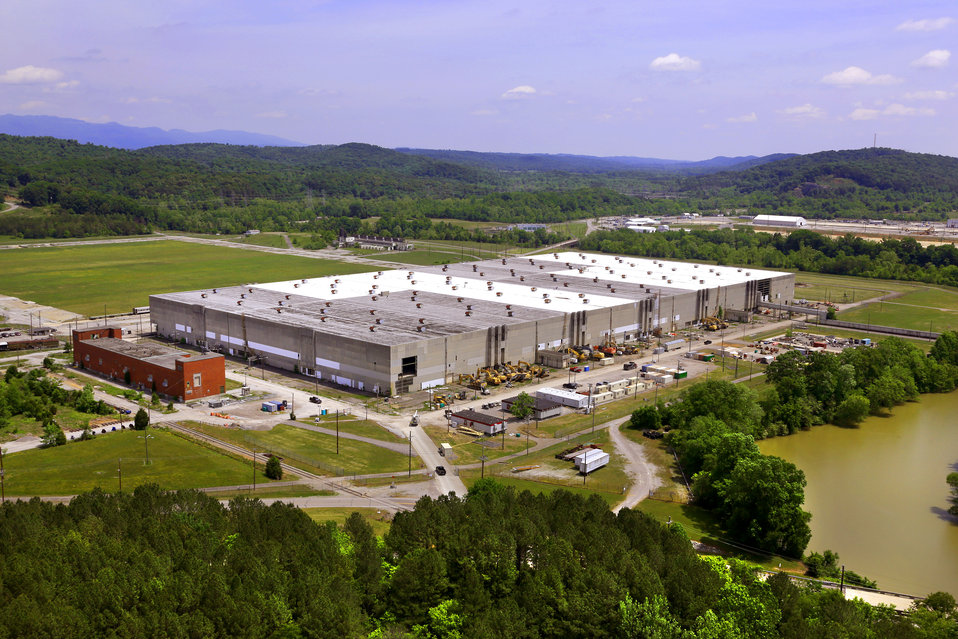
K-31 aerial 2014 Oak Ridge

JRO 0131 ORNL photo Jason Richards 5-20-2014 Oak Ride Tennessee